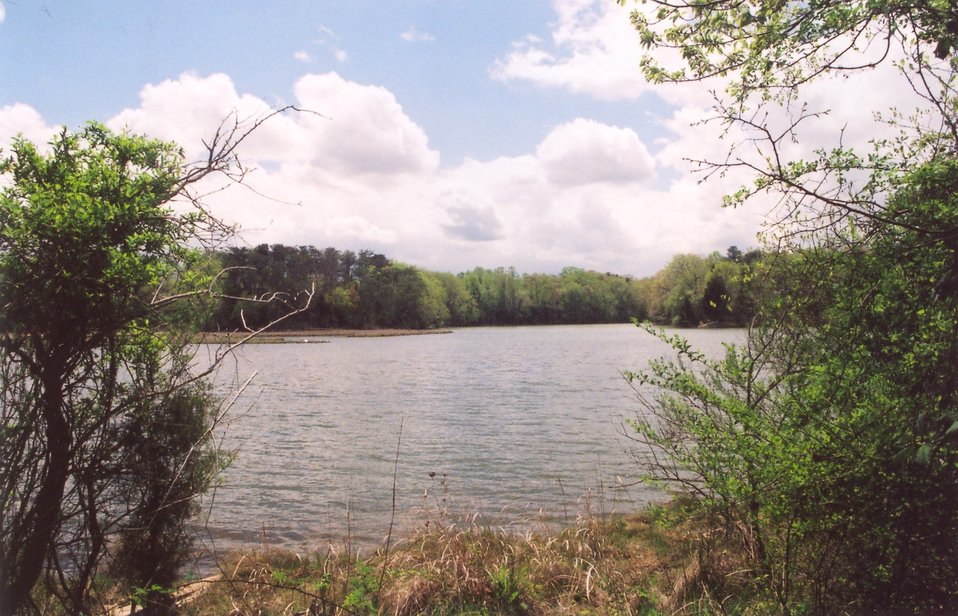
Tidal creek off the Patuxent River